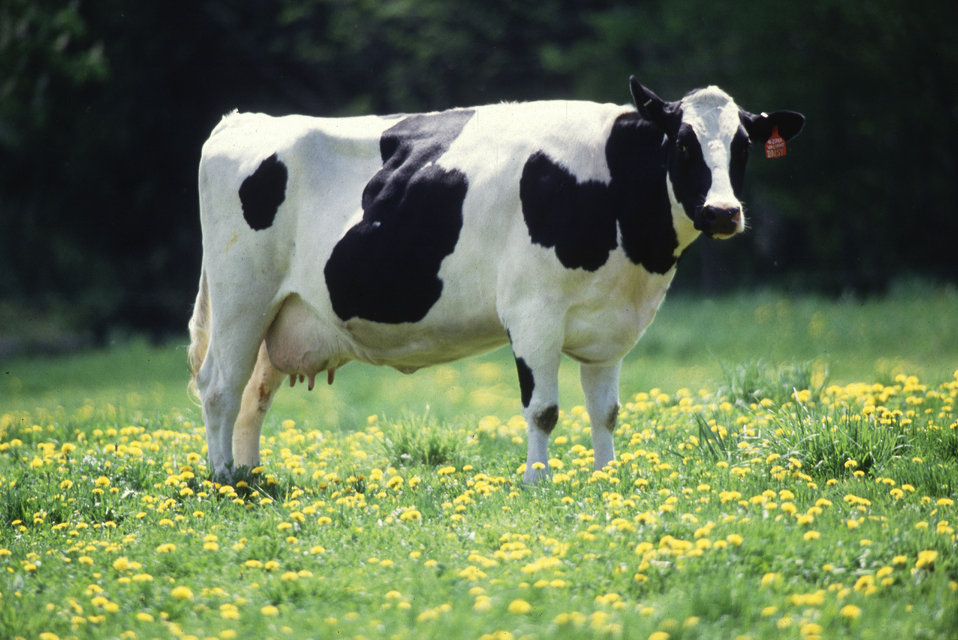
A Holstein stands in an open field.